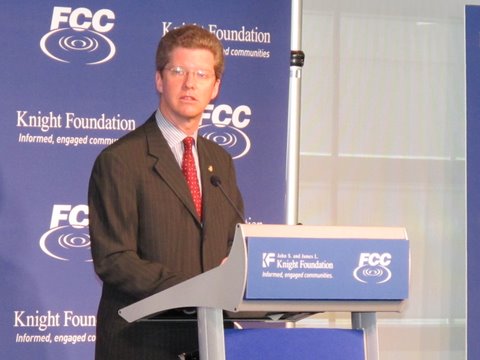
HUD Secretary Shaun Donovan addresses America's Digital Inclusion Summit at The Newseum, March 9, 2010.